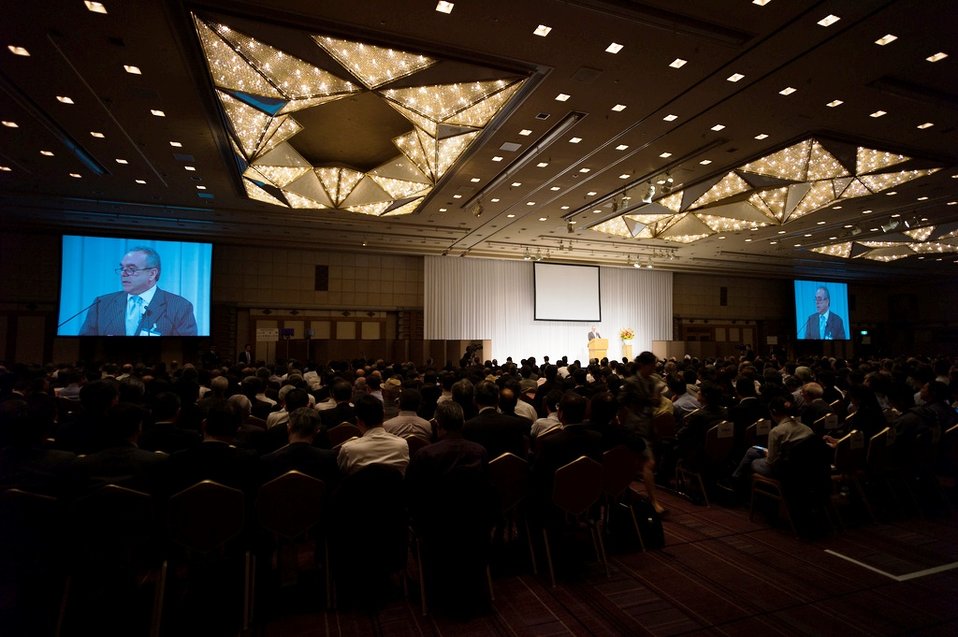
Assistant Secretary Campbell Delivers Remarks on the U.S.-Japan Alliance

Assistant Secretary of State for East Asian and Pacific Affairs Kurt M. Campbell delivers remarks on the strength of the U.S.-Japan alliance and the future of the U.S. Asia-Pacific policy at the Nikkei-CSIS Forum in Tokyo, Japan, October 26, 2012.